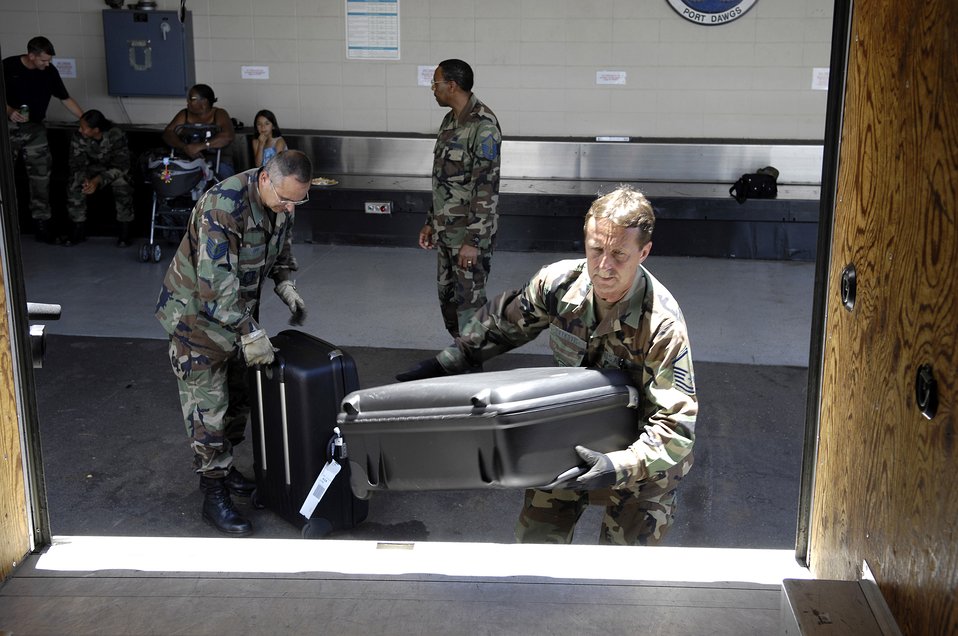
Wright-Patterson Airmen take over Hickam air operations

Air transportation specialists load suitcases on a van July 2 at the passenger terminal center at Hickam Air Force Base, Hawaii. Reservists from the 87th Aerial Port Squadron from Wright-Patterson AFB, Ohio, are conducting their two-week duty with the 735th Air Mobility Squadron.